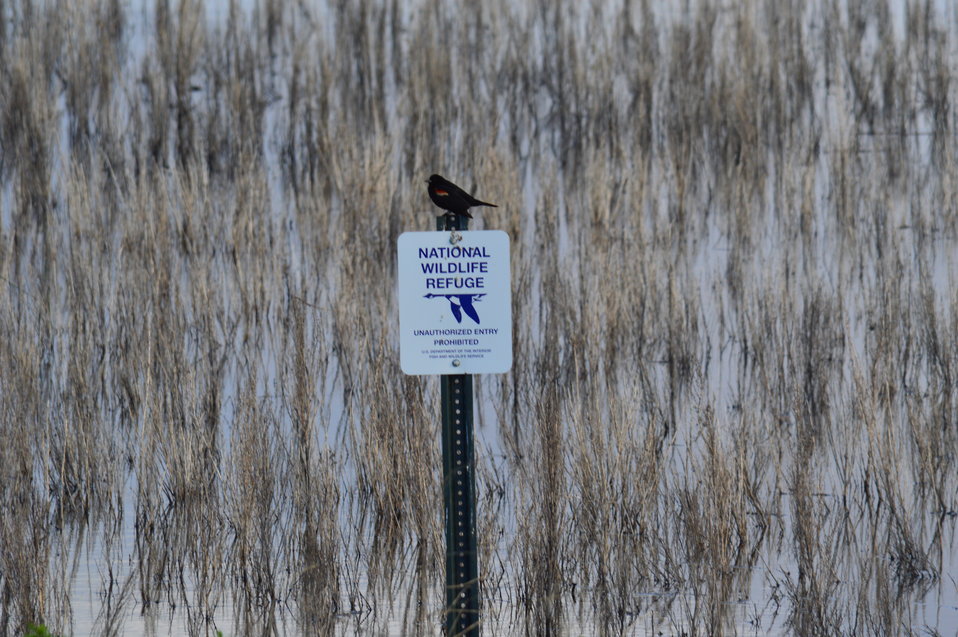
Red-winged blackbird on NWR sign

Scenery and wildlife at Sand Lake National Wildlife Refuge in South Dakota